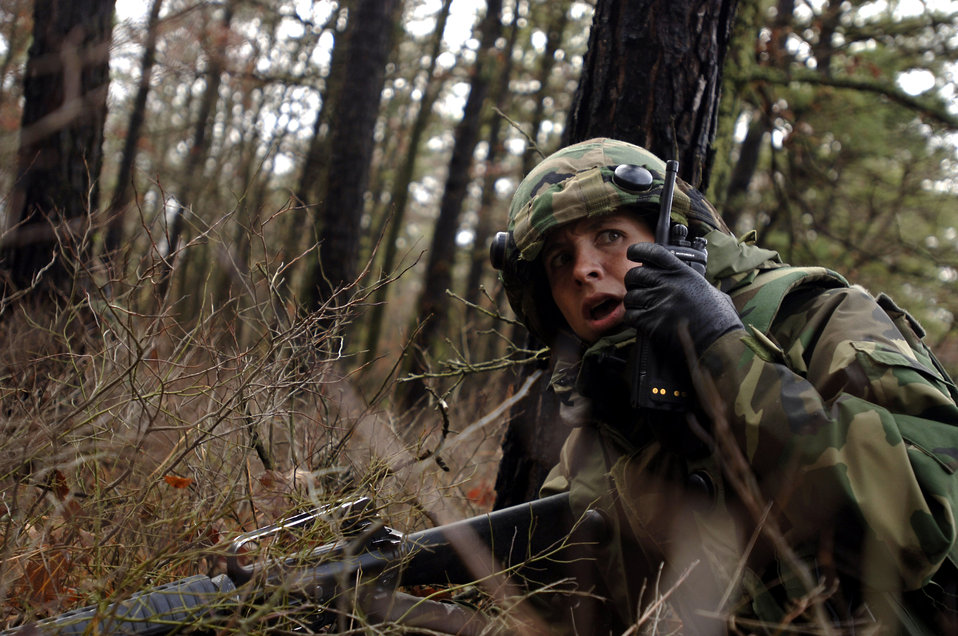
Contingency Skills Training

Major Cristen Lesperance radios in coordinates of simulated insurgents while under fire during the contingency skills training course held Nov. 14 at the Air Mobility Warfare Center in Fort Dix, N.J.